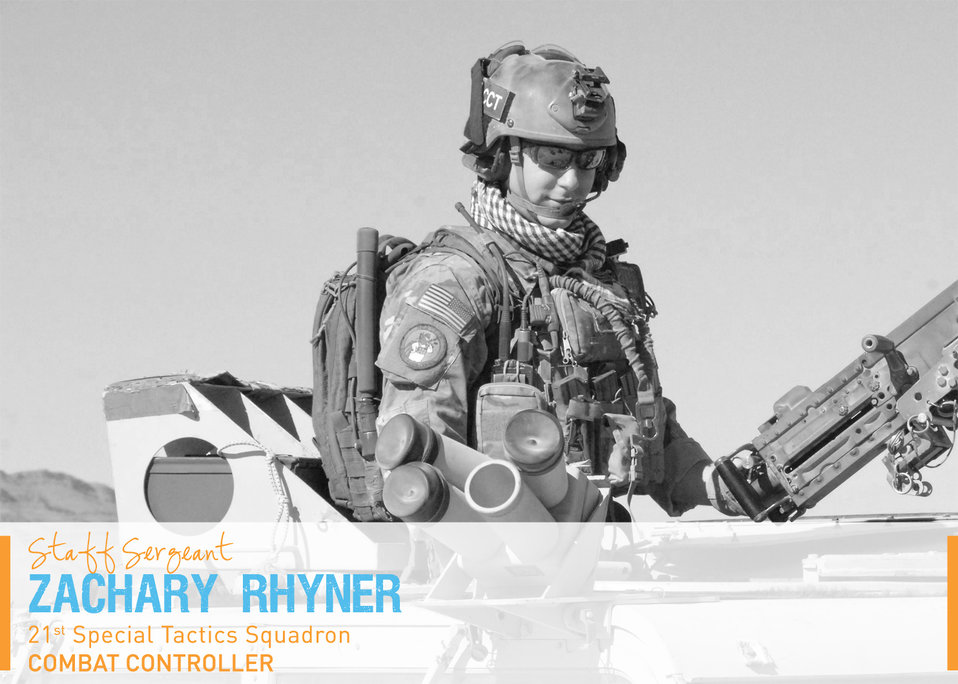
Portraits in Courage Vol 4: Staff Sgt Zachary Rhyner, combat controller, 21st Special Tactics Squadron. During an attack, he directed 50 close-air support strikes against enemy forces within 200 meters of his team